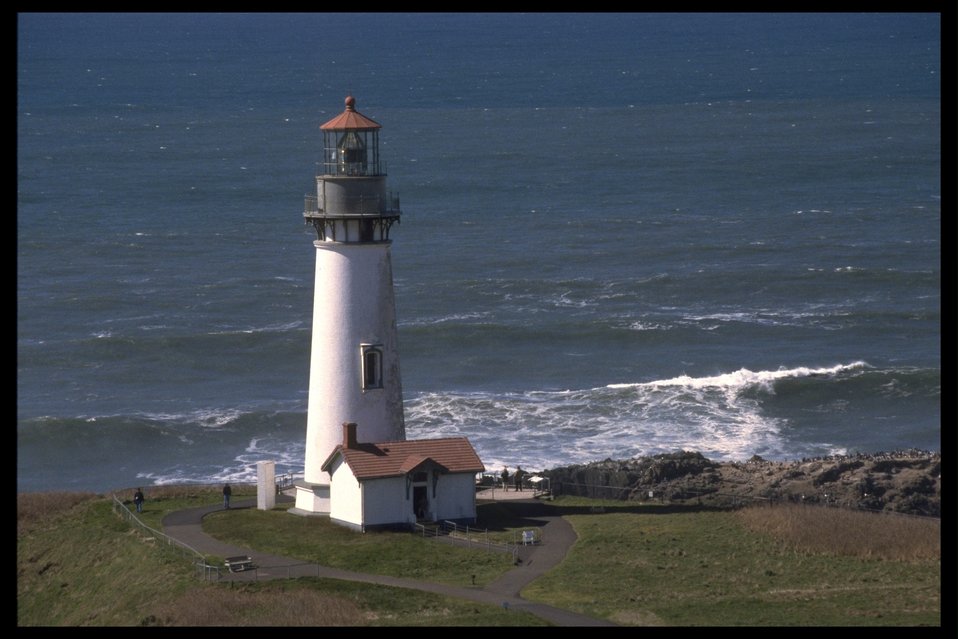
Yaquina Head Lighthouse.